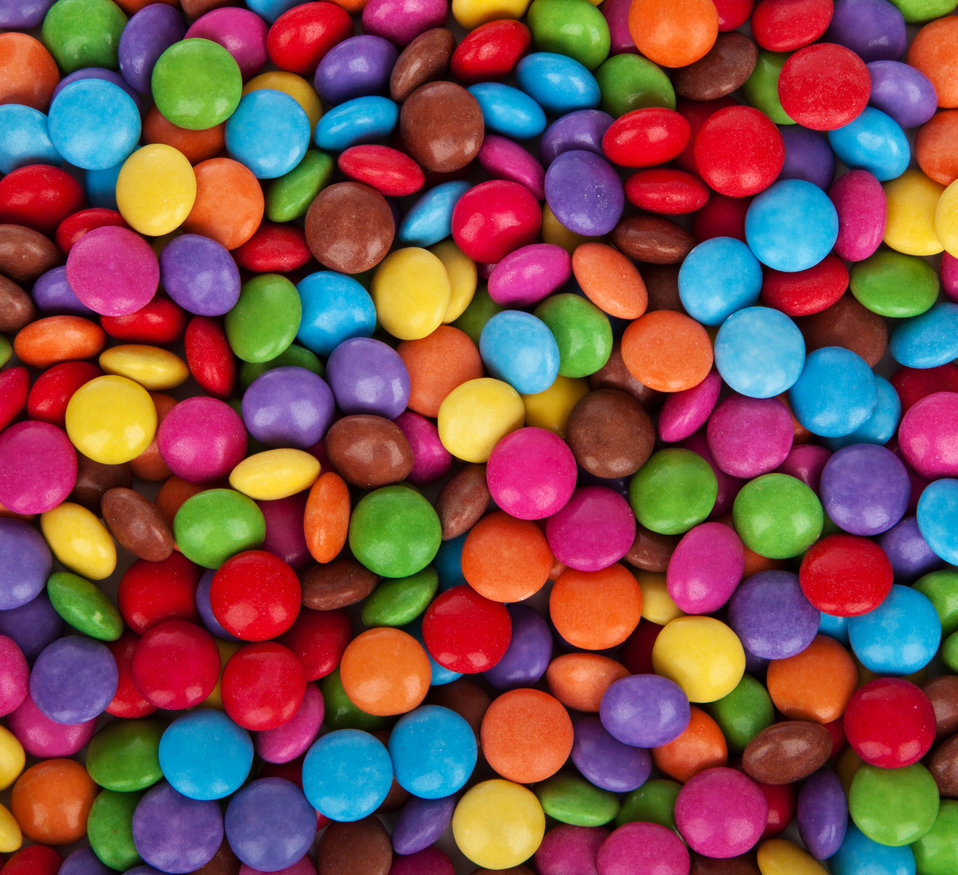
Smarties background

Colorful sugar coated chocolate buttons.